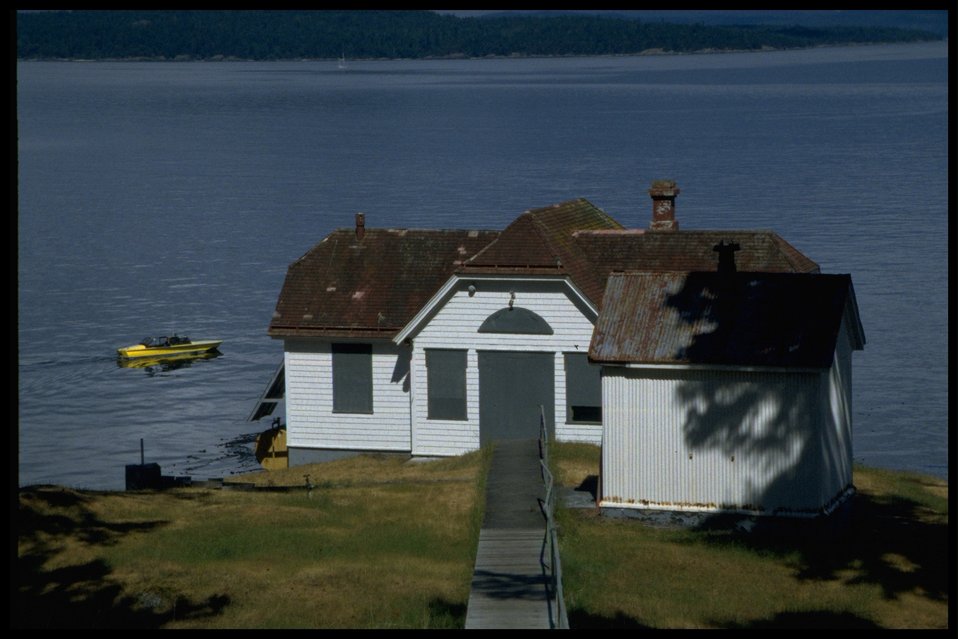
Turn Point lighthouse with water taxi waiting in the background.